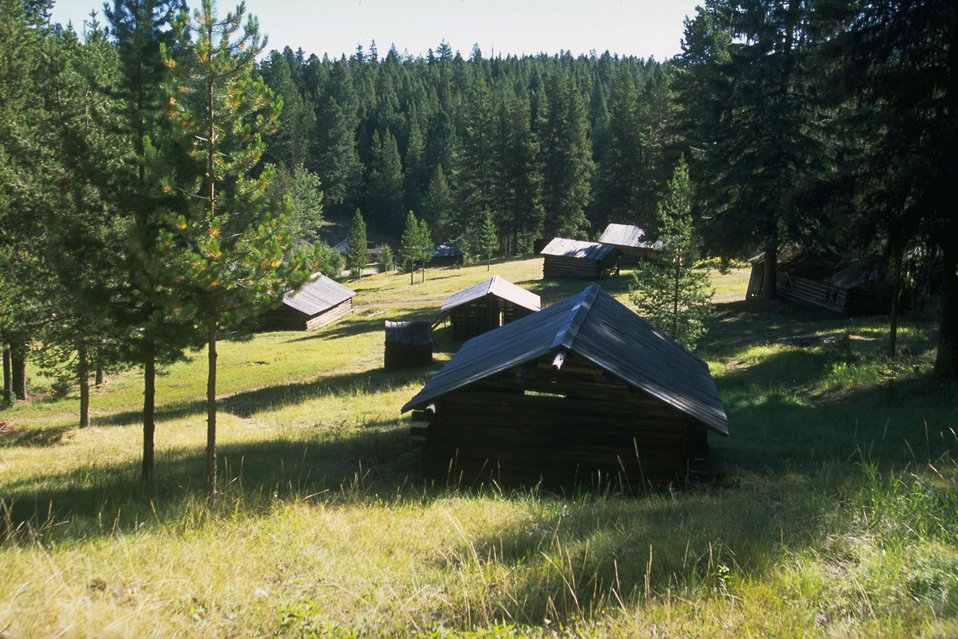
Garnet Ghost Town residential cabins